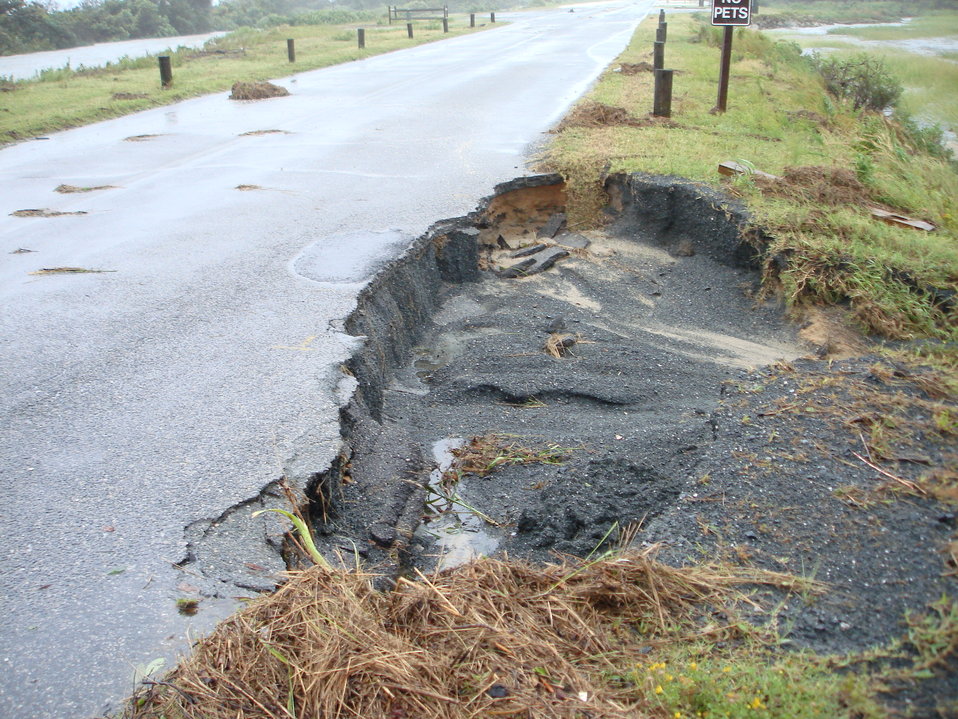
Erosion damage caused by Hurricane Irene on Beach Road at Chincoteague National Wildlife Refuge in Virginia.